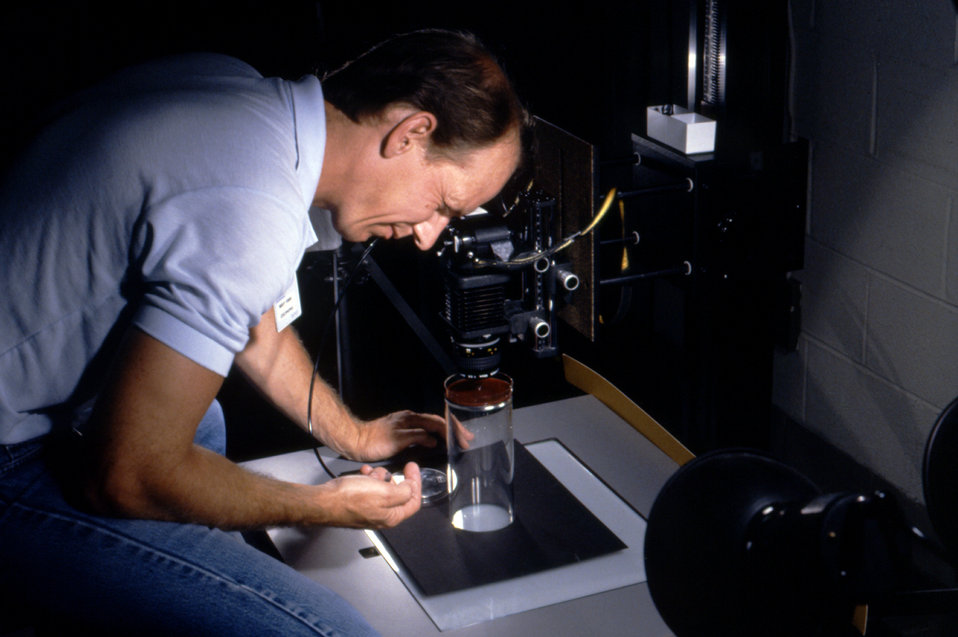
This is CDC bio-medical photographer Jim Gathany during a photo shoot as he uses a copystand photographic set up.